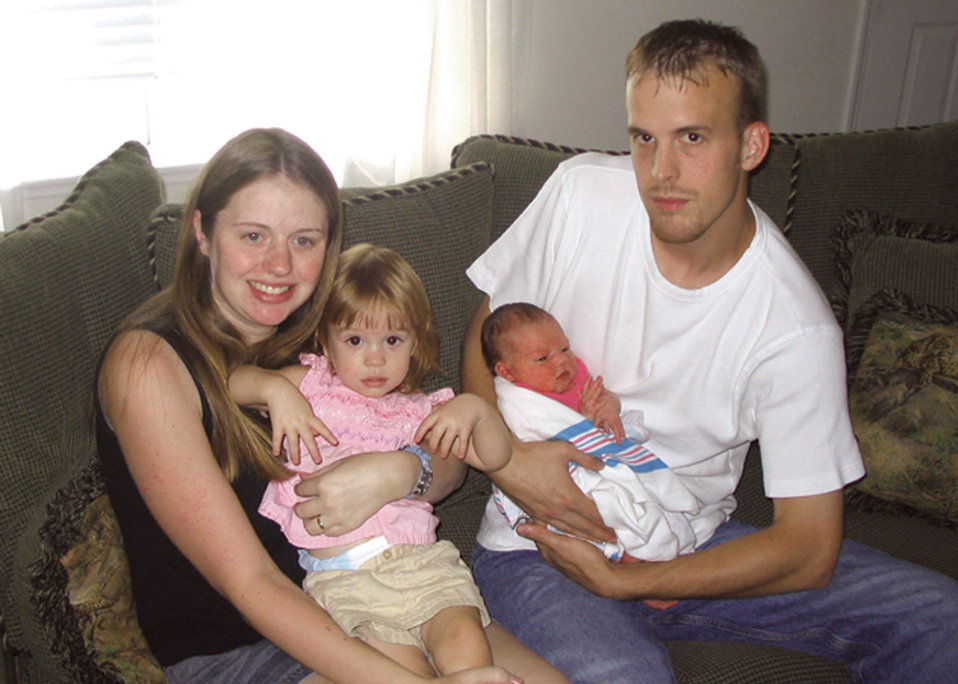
Couple gets surprise home delivery

MOODY AIR FORCE BASE, Ga. -- Staff Sgt. David Hayes holds his newborn daughter, Caysie, while his wife, Charlotte, holds their 20-month-old daughter, Madison. Sergeant Hayes delivered Caysie in the bathroom of their home when they were unable to get to the hospital in time. He is assigned to the 347th Aircraft Maintenance Squadron.